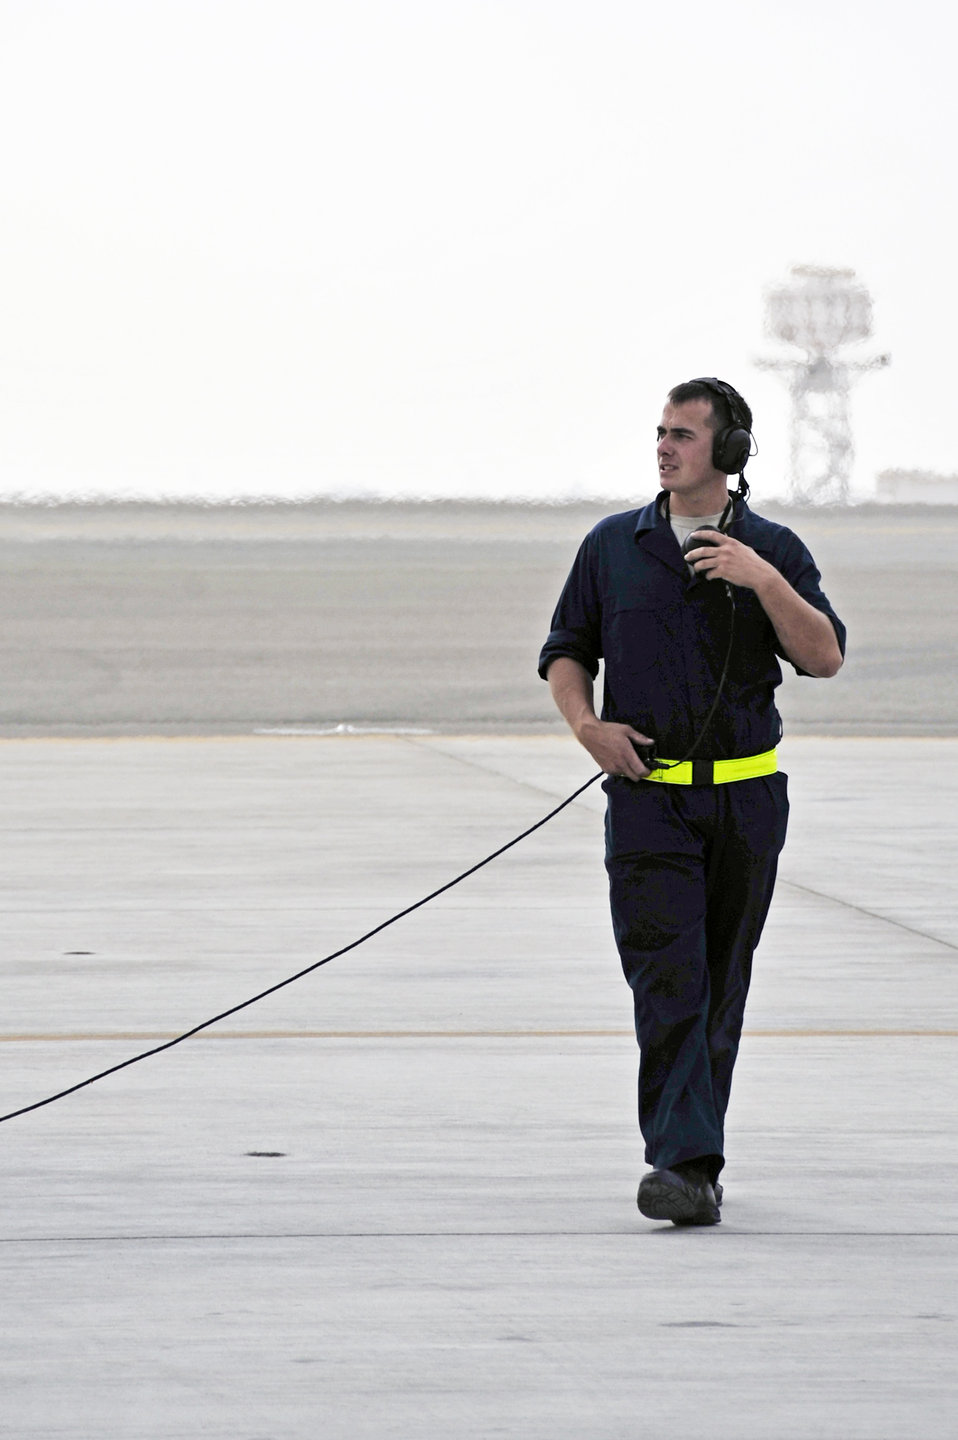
Raptors fly in Iron Falcon

Senior Airman Adam Smith, 1st Fighter Wing crew chief, completes a last minute walk around Nov. 30, 2009, at an airfield in Southwest Asia. Airman Smith is participating in the Iron Falcon exercise while on temporary duty from Langley Air Force Base, Va.